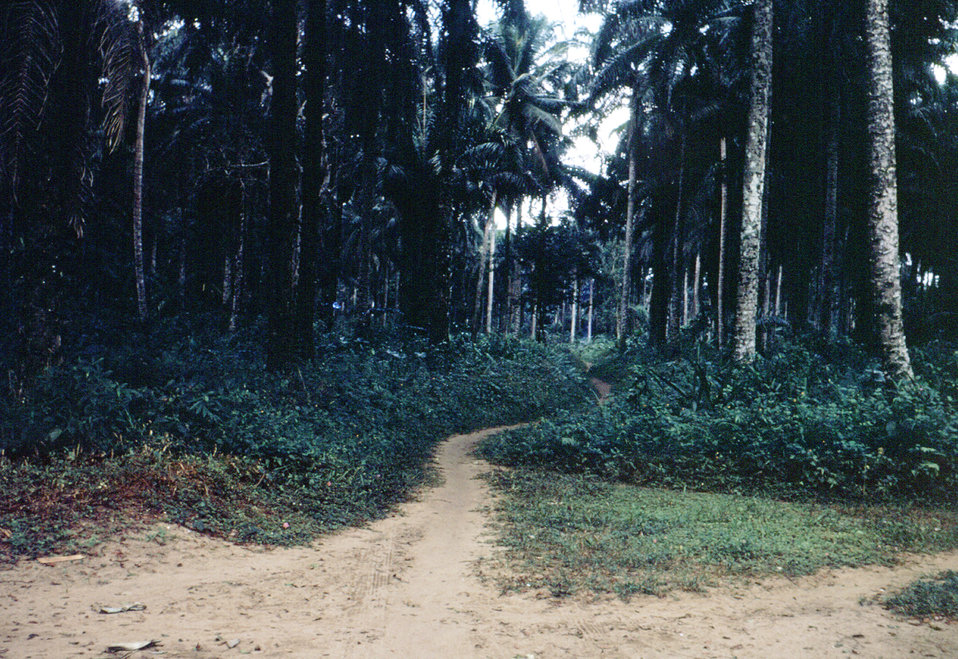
This was a typical road intersection in southern Nigeria during the country's civil war with Biafra which lasted from 1968 to 1970.